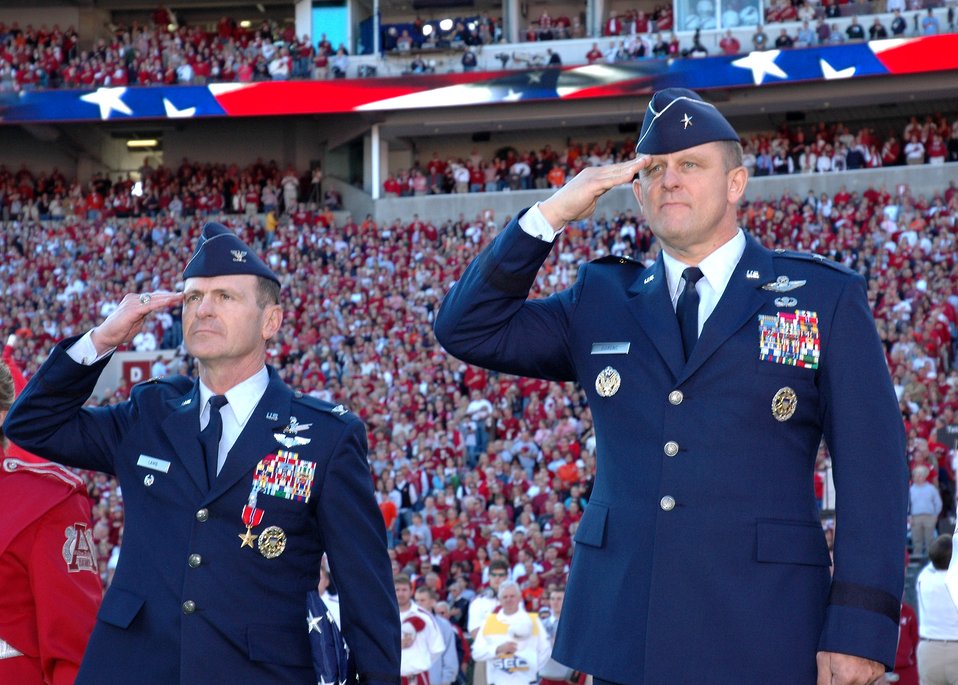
Colonel receives Bronze Star during Alabama-Auburn game

Col. Duane Lamb and Brig. Gen. Frank Gorenc, former 332nd Air Expeditionary Wing commander at Balad Air Base, Iraq, salute during the national anthem at the University of Alabama vs. Auburn University football game Nov. 18. More than 90,000 fans watched as Colonel Lamb, an Air War College instructor at Maxwell Air Force Base, Ala. was presented a Bronze Star from his former commander in Iraq. Colonel Lamb served as the 732nd Expeditionary Mission Support Group commander at Balad AB.